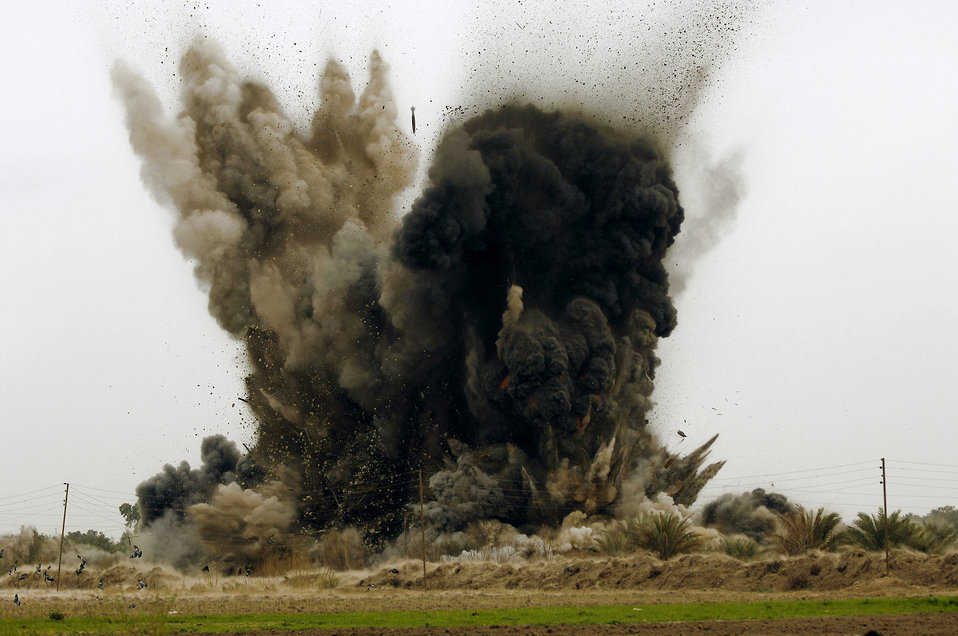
B-1B destroys al-Qaida torture compound in Iraq

An al-Qaida torture compound and prison is destroyed after being hit with six guided bomb unit-38 Joint Direct Attack Munitions from a B-1B Lancer at 2:07 p.m. March 10 in Zenbaraniyah, Iraq.